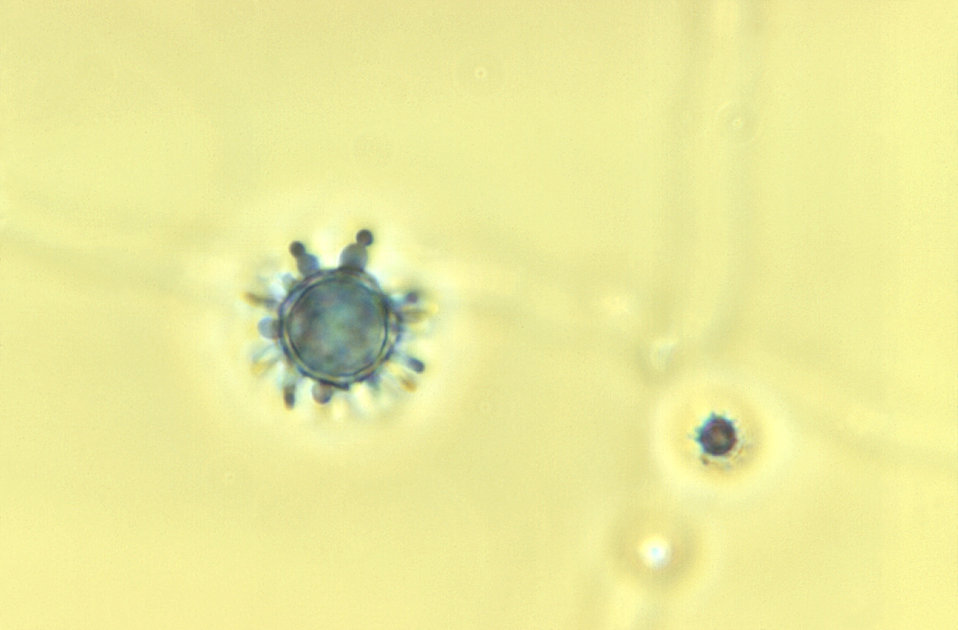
At a magnification of 1125X, this photomicrograph revealed some of the ultrastructural morphology exhibited by a Histoplasma capsulatum fungal macroconidium. The reproductive spores produced by H. capsulatum can be either macroconidia or microconidia. It is the macroconidia that exhibits finger-like projections from its surface, whereas, the microconidia are much smaller, round, and possess a smooth surface. See PHIL 299 for a depiction of both macro- and microconidia.What is histoplasmosis?